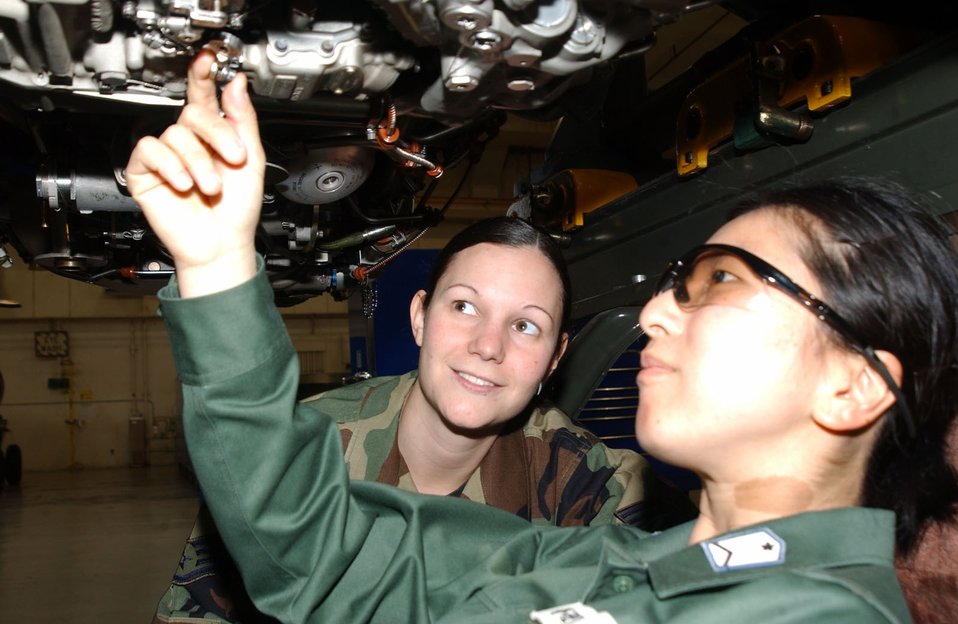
Japanese Airmen

Japan Air Self-Defense Force Staff Sgt. Aiko Koba and Air Force Staff Sgt. Tatiana Albrecht, 18th Component Maintenance Squadron, review different methods of maintenance during an exchange visit at Kadena Air Base, Japan, March 13 to 23, 2006. Sergeant Shiroi is one of seven Japanese NCOs who visited Kadena as part of the JASDF-U.S. Air Force Bilateral Exchange Program. The program is designed to enhance NCO relationships, share culture and professional military ideas, and gain a better understanding of allied operations.